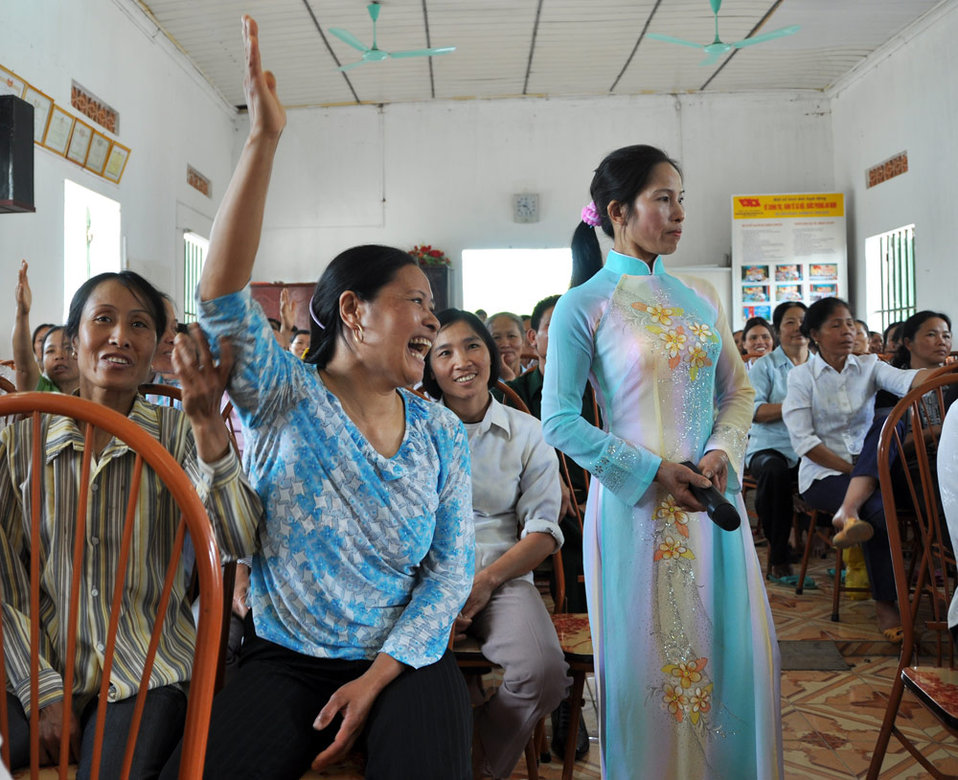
Residents in Vietnam's Tien Ngoai Commune, Duy Tien District, Ha Nam Province, discuss ways to prevent and control avian and pandemic influenza.